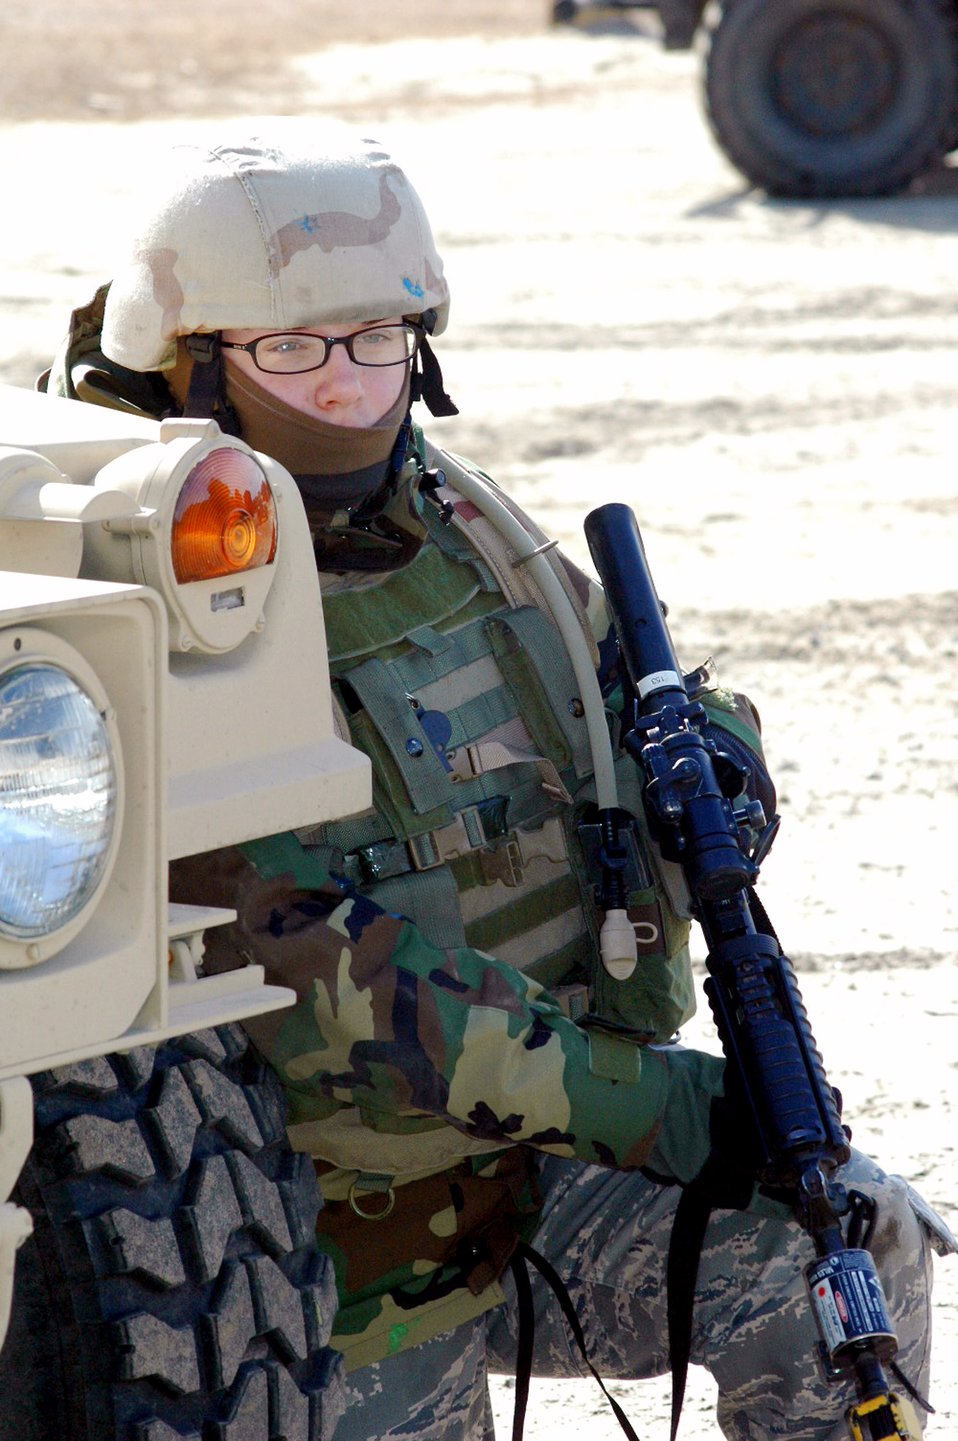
Warrior training

Airman 1st Class Jamie Elrod takes up a defensive position during a scenario for training for the course Feb. 20 on a range at Fort Dix, N.J. The course is taught by members of the Air Force Expeditionary Center's Expeditionary Operations School and 421st Combat Training Squadron and prepares security forces Airmen for upcoming deployments. Airman Elrod is a 49th Security Forces Squadron member from Hollomon Air Force Base, N.M., and a student in the Air Force Phoenix Warrior Training Course 08-3.